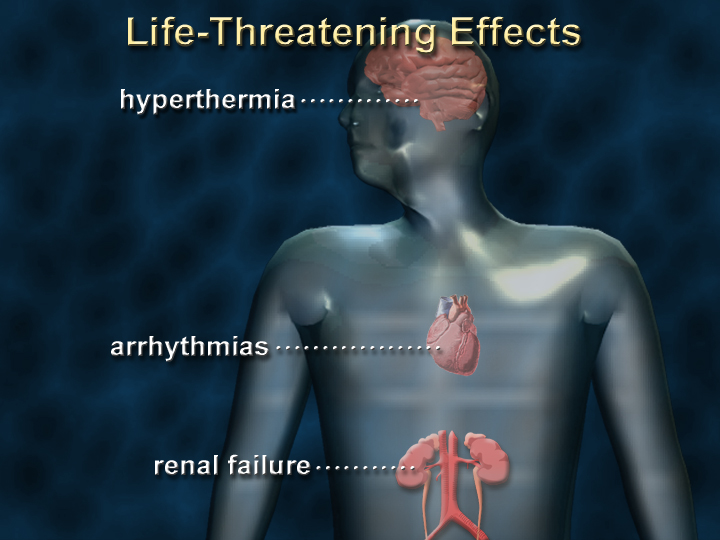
Ecstasy - life-threatening effects

Some people take multiple doses of ecstasy in one night (“stacking”). This might be due to the reinforcing effect of the drug wearing off over time. Increased doses also increase the adverse effects, and some of these can become life-threatening. For example, repeated doses or a high dose of ecstasy can cause heat injury due to hyperthermia, hypertension (high blood pressure), cardiac arrhythmias (irregular heart beat), muscle breakdown, and renal failure due to salt and fluid depletion.